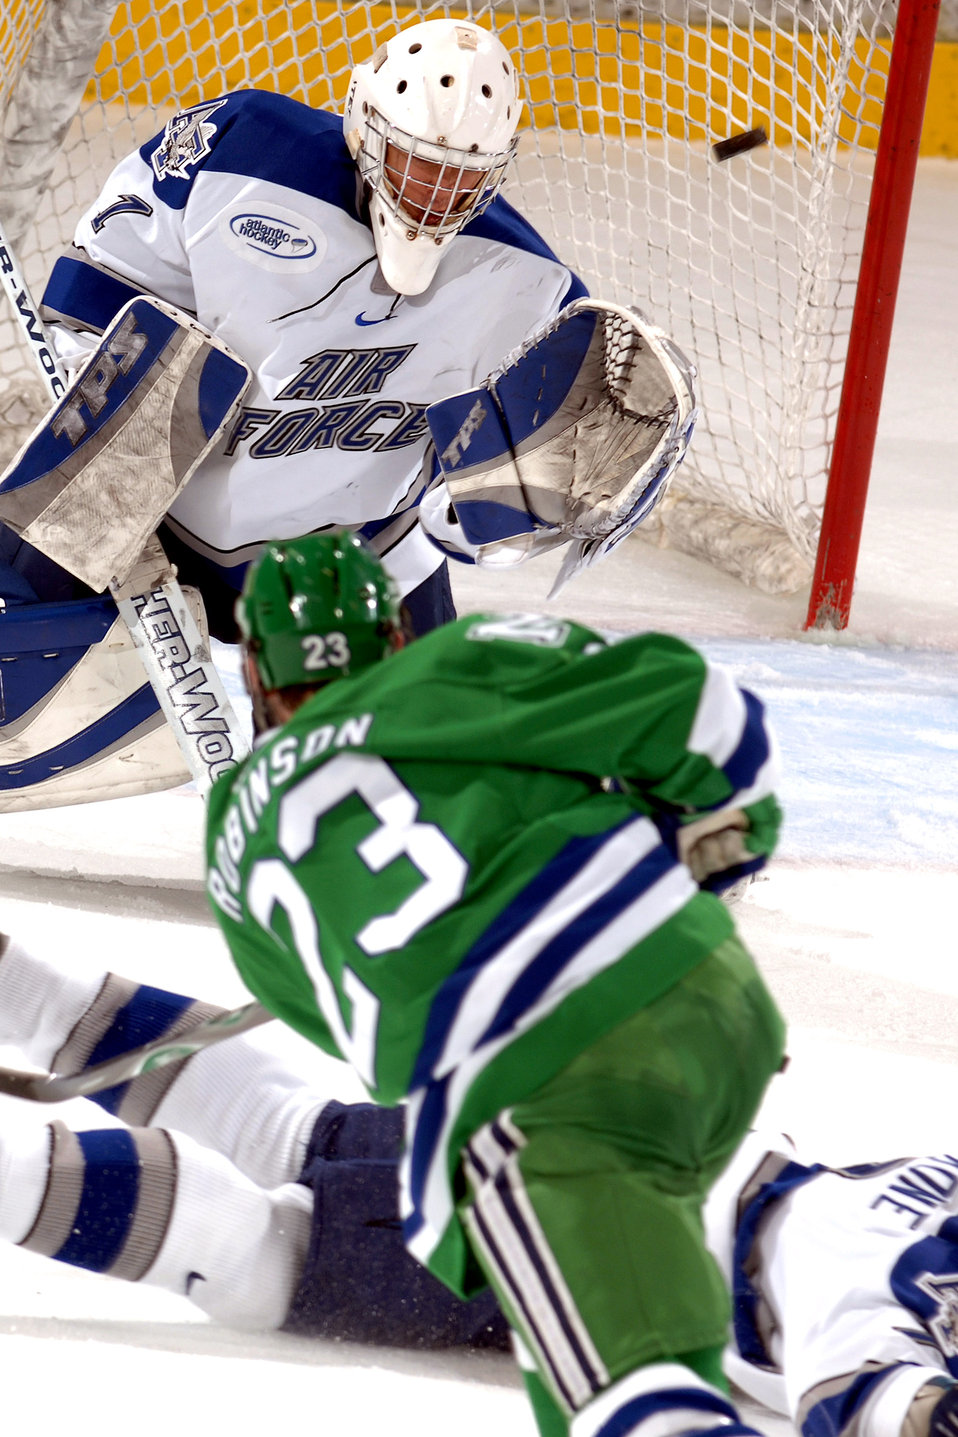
Hockey: Falcons score five in the third for 6-2 win

Mercyhurst's Brett Robinson takes a slap shot over sprawling U.S. Air Force Academy defenseman Frank Schiavone as Falcon goalie Andrew Volkening braces for the puck Nov. 2 at the Cadet Ice Arena in Colorado. The teams split the weekend series leaving the bluesuiters 4-2 overall and 2-2 in the Atlantic hockey Association.